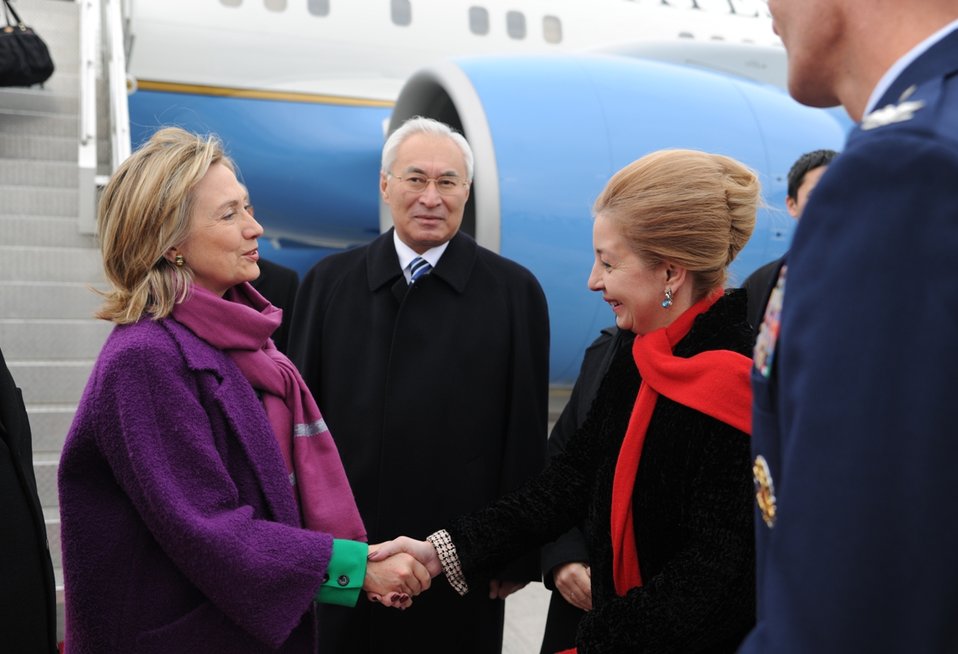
Secretary Clinton Is Greeted By Ambassador Gfoeller

U.S. Secretary of State Hillary Rodham Clinton is greeted by U.S. Ambassador to Kyrgyzstan Tatianna Gfoeller in Bishkek, Kyrgyzstan, on December 2, 2010.